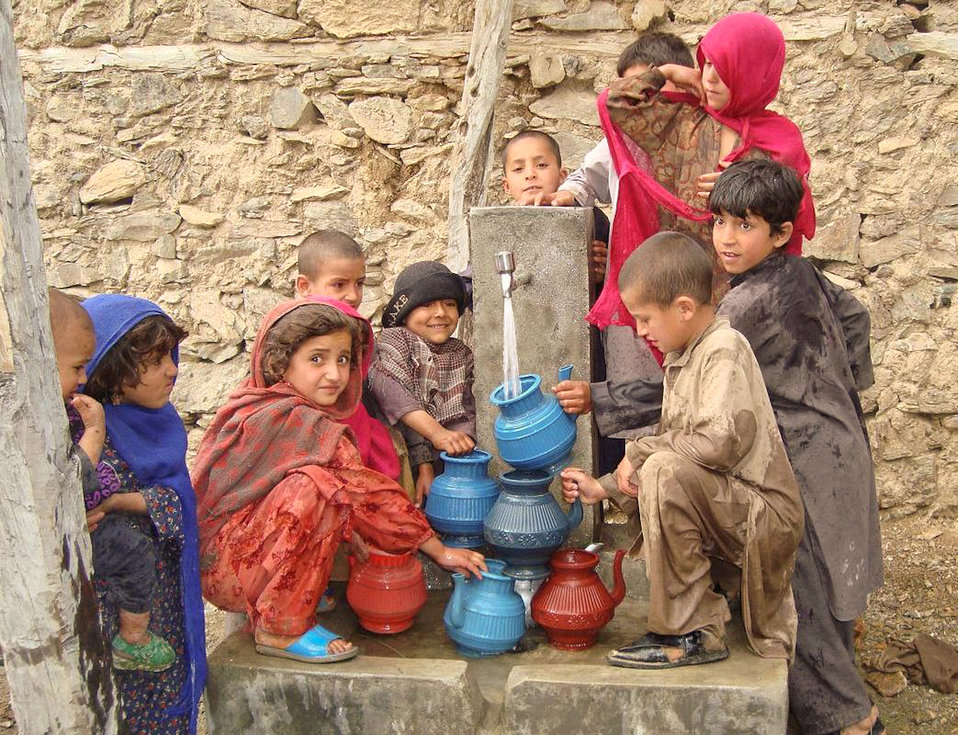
The Watering Hole

USAID and the government of Afghanistan have joined forces in a three-year battle against waterborne diseases, which kill 40,000 Afghan children each year. To help solve this problem, USAID has funded over 3,000 new and renovated wells throughout the country that now provide clean, safe drinking water for more than 615,000 people.